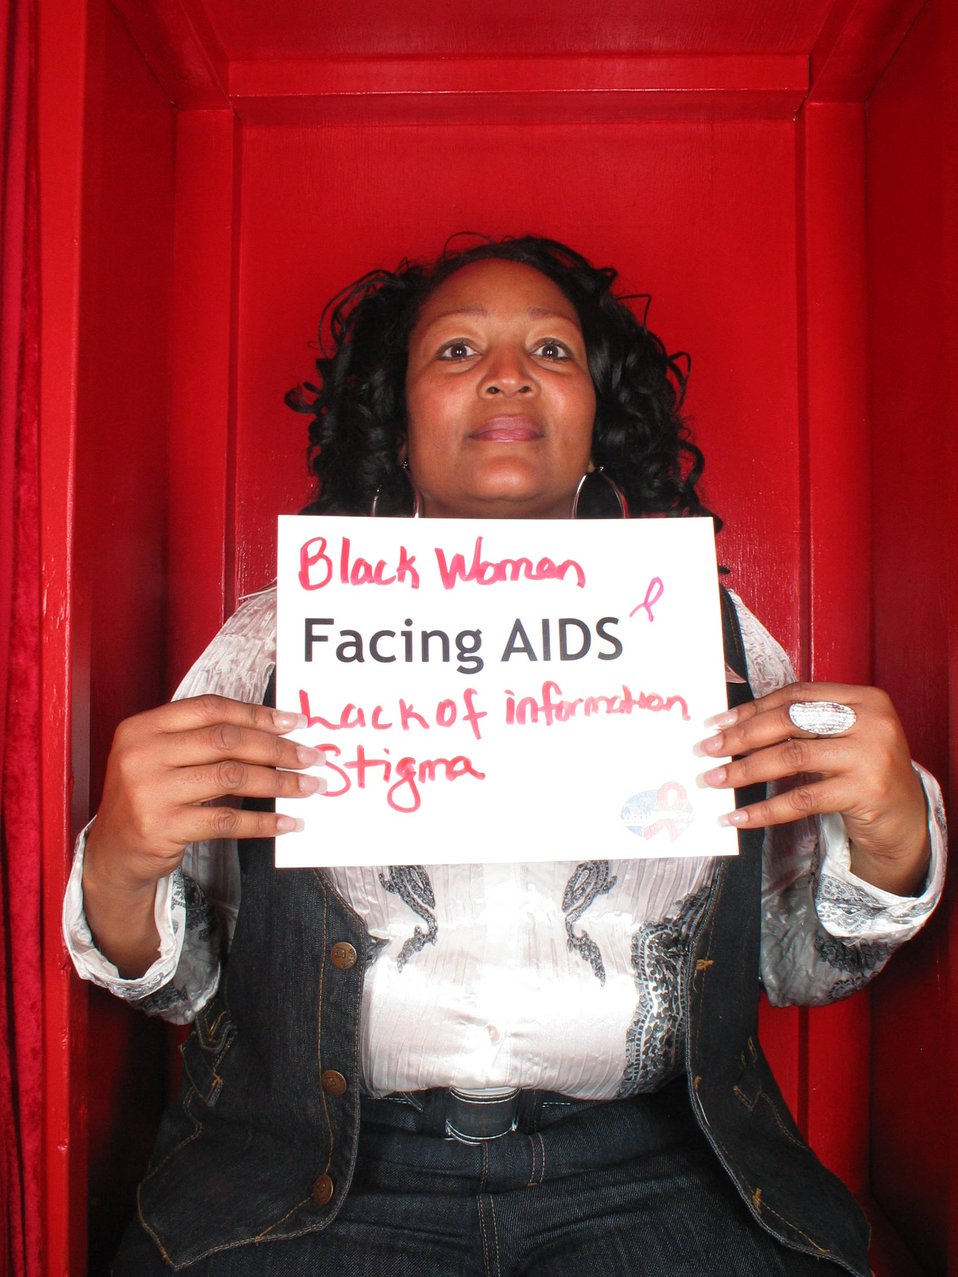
Black women Facing AIDS lack information. Stigma